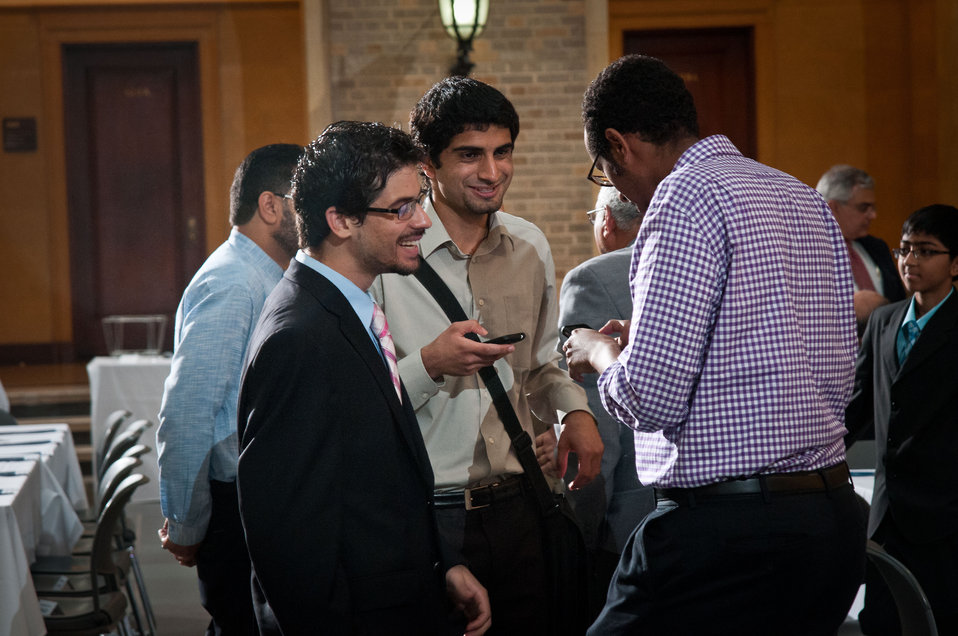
Guests meet and network during the Iftar celebration, co-sponsored by the U.S. Department of Agriculture, U.S. Agency for International Development (USAID) and Islamic Relief USA, on Tuesday, August 7, 2012, in the USDA Whitten Building, in Washington, D.C. Ramadan is the month of fasting, intensive prayer, sacrifice and worship for Muslims around the world. Throughout this month, Muslims fast during the day, abstaining from consuming food from dawn to dusk and using this time to purify spiritually. Fasting reminds Muslims of the poverty and hunger suffered by many in the United States and worldwide. It is a connection with those who are hungry not through devotion, but through the many global factors that lead to hunger and famine. Iftar is the meal at which Muslims break their fast at sunset, usually by eating dates, according to the Prophetic tradition.